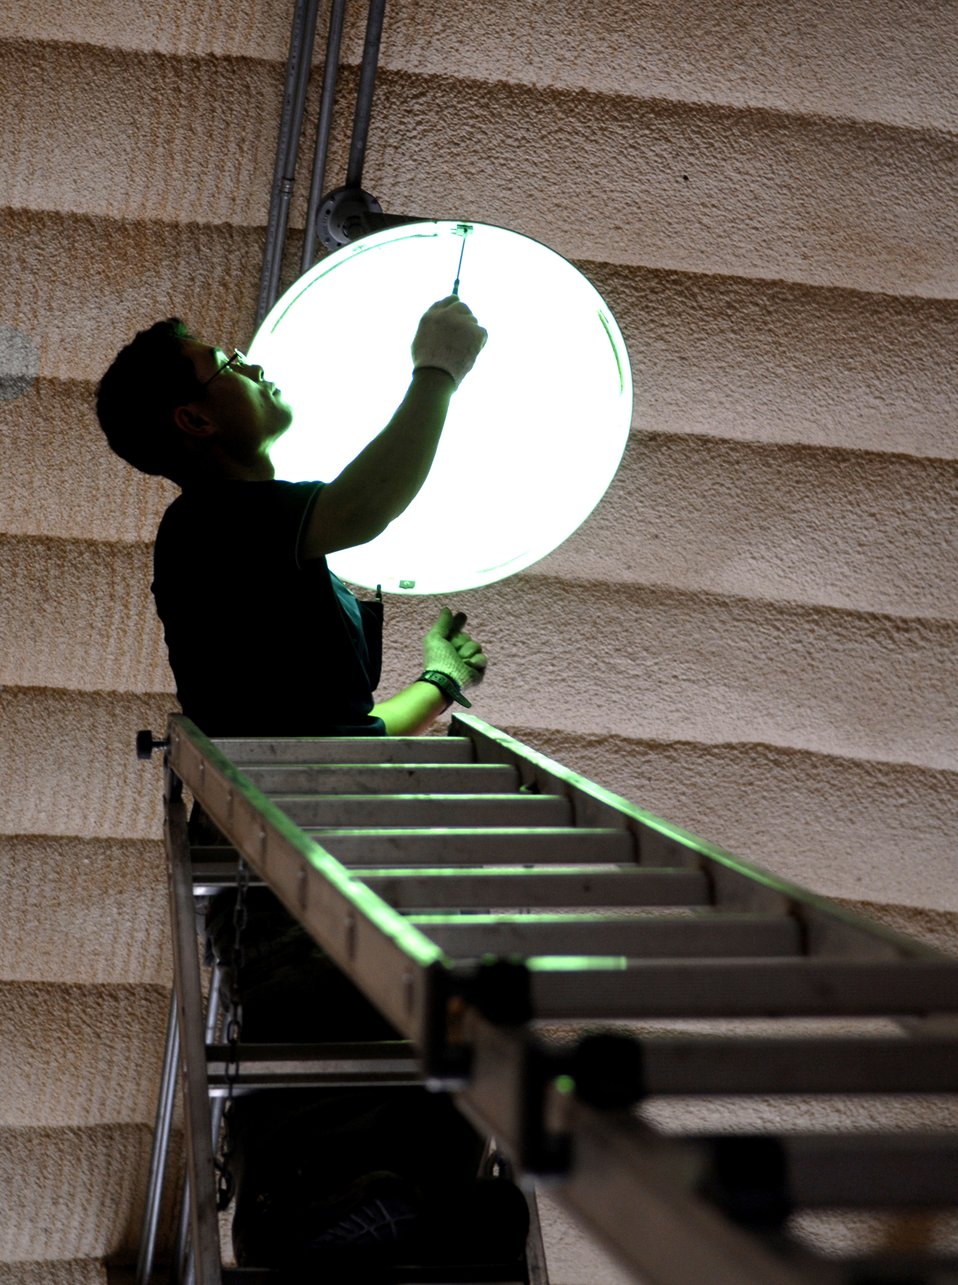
Preparing a city

Konho Yi replaces a metal halide bulb in one of the housing units at Rush Park July 28 at Osan Air Base, South Korea. The bulbs are being replaced in preparation for Ulchi Freedom Guardian, a joint bilateral exercise set to start in August. More than 550 military members will participate in the exercise. Mr. Yi is a contract electrician.